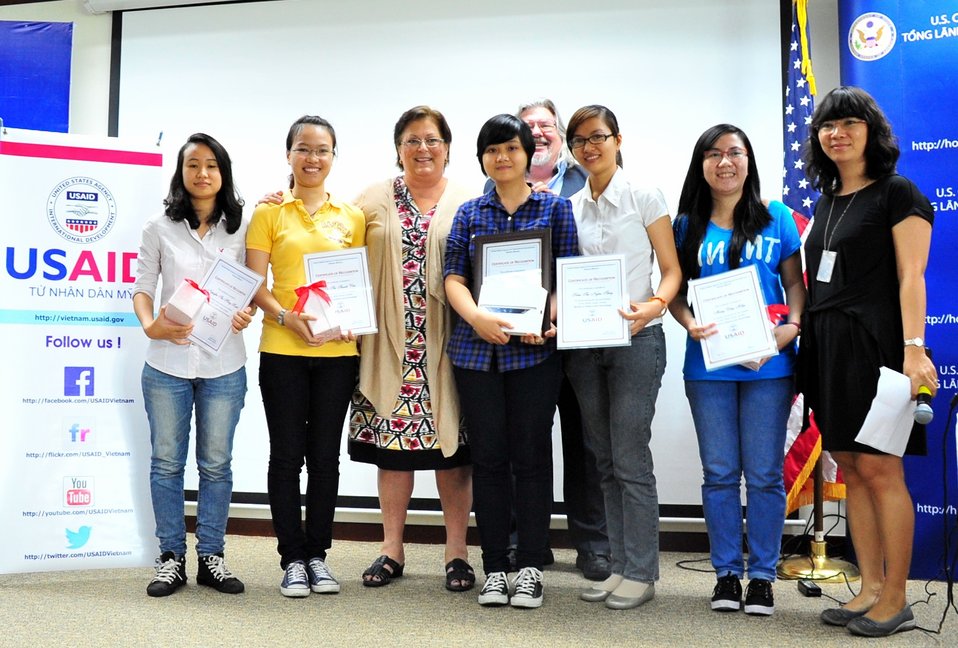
Women in Science and Technology Essay Contest Award Ceremony

U.S. Embassy Deputy Chief of Mission Claire Pierangelo presents certificates to top 10 finalists in the USAID Women in Science and Technology Essay contest on May 16, 2013.